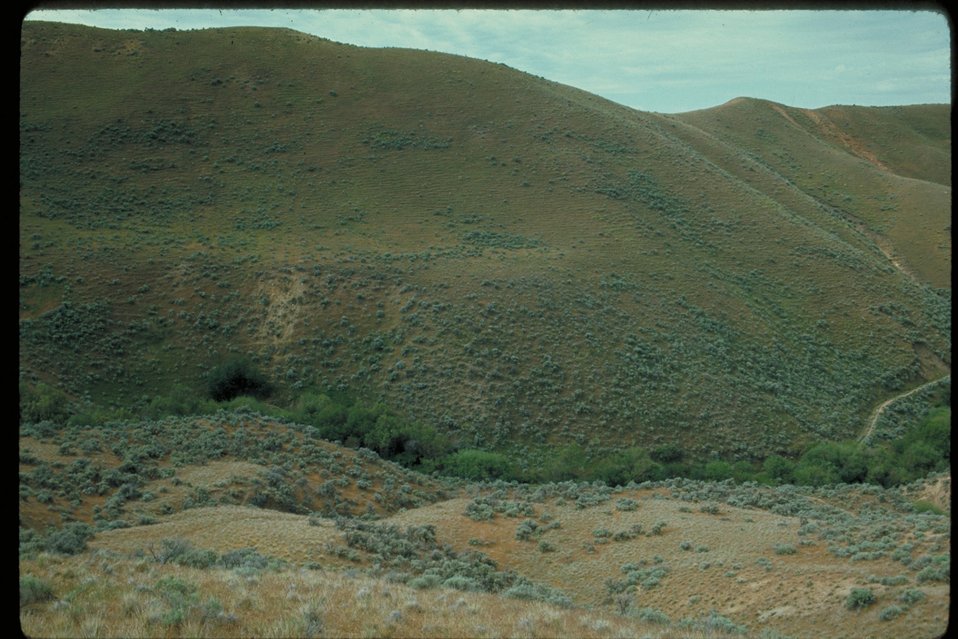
Boise Front Four Rivers Field Office LSRD Lower Snake River District